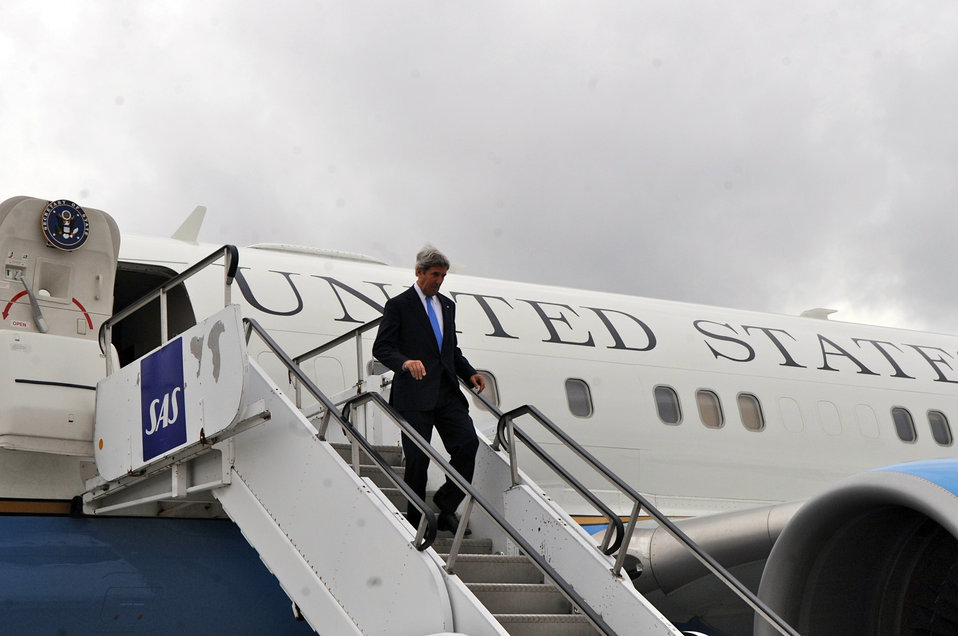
Secretary Kerry Arrives in Stockholm, Sweden

U.S. Secretary of State John Kerry disembarks from his Air Force jet on May 14, 2013, after arriving in Stockholm, Sweden, for meetings with Swedish officials.